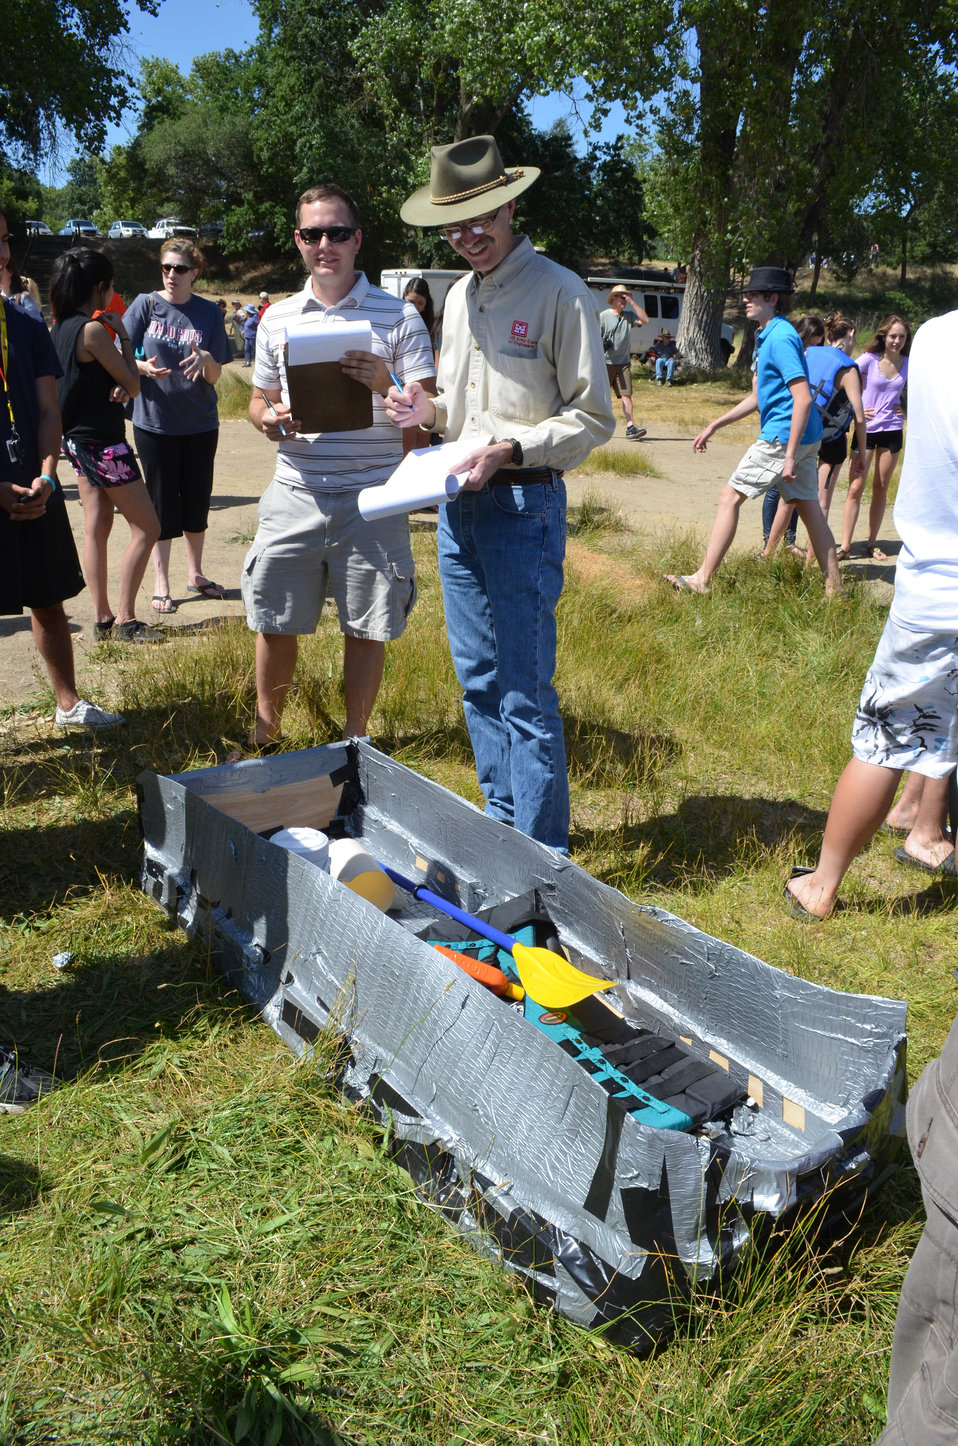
District employees judge annual Folsom High School Regatta

Sacramento District employees Bradley Call (left) and Andrew Johnson (right) observe one of the boats competing in the Folsom High School Regatta at Negro Bar State Park in Folsom, Calif., May 24, 2013. Call and Johnson represented the Sacramento District as judges for the contest. High school and middle school students constructed boats from cardboard, plywood, or other buoyant materials to compete in the race.